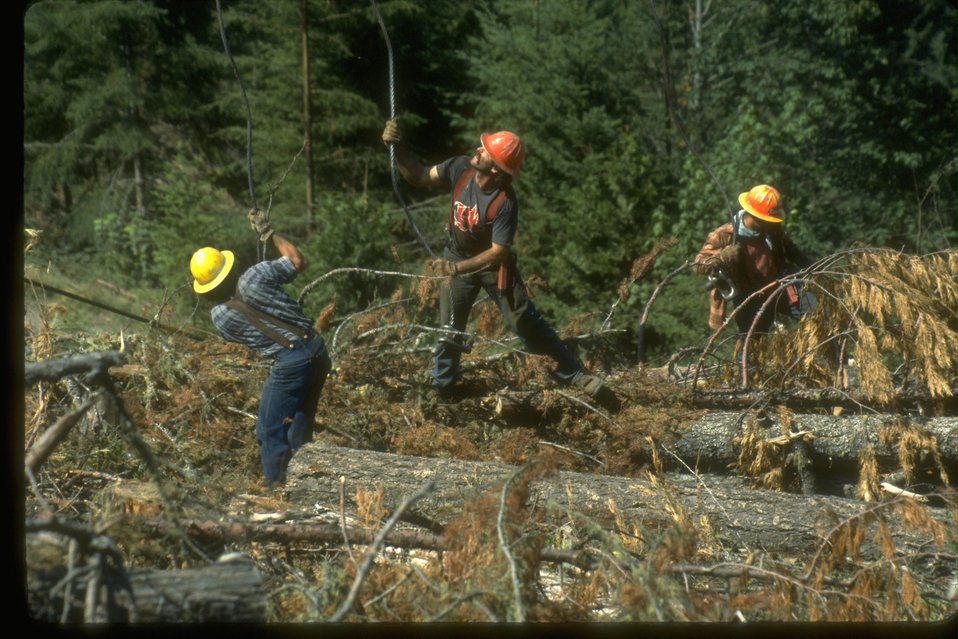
Choker Setters getting ready for the timber sale.